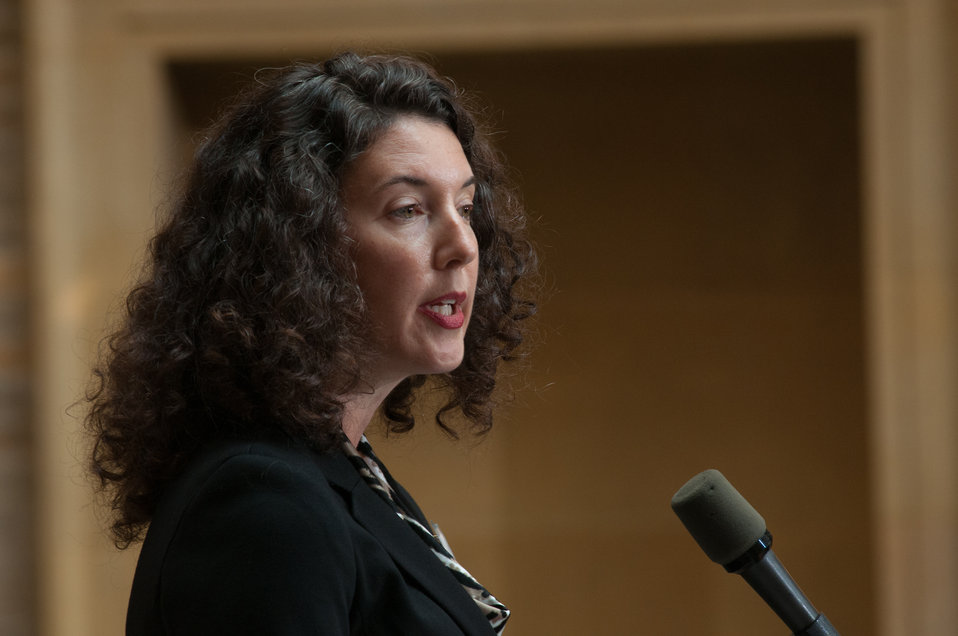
Pellet Fuels Institute Executive, Director Jennifer Hedrick speaks during the U.S. Department of Agriculture (USDA) Wood Energy Memorandum of Understanding, and awarded wood energy grants announcements event, at the USDA Headquarters, in Washington, D.C., on Wednesday, September 11, 2013. Signing the MOU are partnership leaders Biomass Thermal Energy Council, Executive Director Joseph Seymour; Alliance for Green Heat, President John Ackerly, USDA Agriculture Deputy Secretary Krysta Harden; Pellet Fuels Institute Executive, Director Jennifer Hedrick; Biomass Power Association, President and CEO Bob Cleaves, and Secretary Thomas Vilsack who signed it earlier. Moderating the event is Under Secretary for Rural Development Doug O’Brien.
The partnership agreement focuses on promoting wood energy nationwide as a means to address fire risks, bolster rural economic development, improve air quality, and help meet the Obama Administration’s renewable energy and energy efficiency goals. These organizations support the use of wood energy across the scale of users – from residential users, to commercial and intuitional facilities, to industrial production of heat and or electricity to drive businesses and feed the electrical grid.
Under the terms of the five grants announced by Deputy Secretary Harden, private, state and federal organizations will work together to stimulate the development of additional wood energy projects in their states. Collectively, $2.9 million will be spent o this effort -- $1.1 million on federal funds and $1.8 million in non federal funds. For more information o0n the cooperative agreement program, visit na.fs.fed.us.werc/wood-energy/ USDA Photo by Lance Cheung.